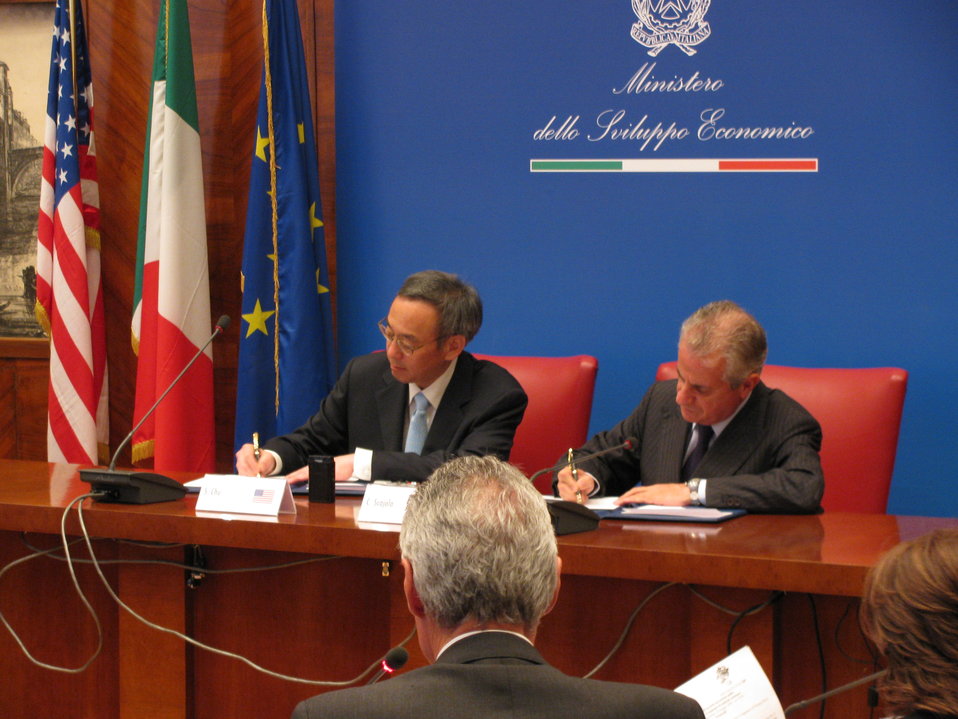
Signing of CCS Agreement with Italy